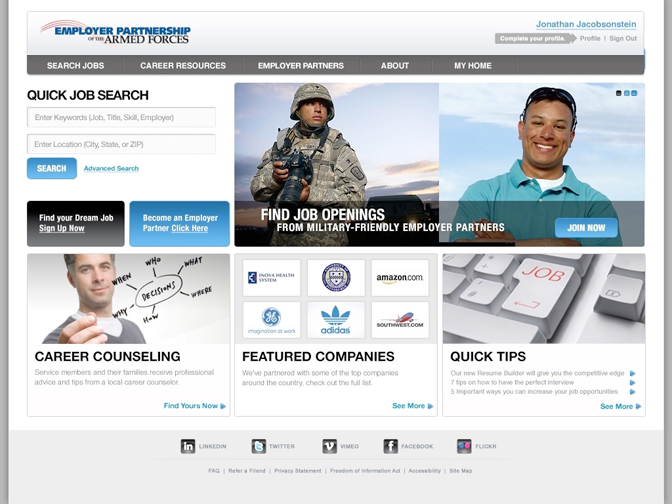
Portal helps vets, reserves, guardsmen land jobs

A new user-friendly Web portal will make it easier for veterans -- as well as reserve-component members, their families and wounded warriors -- land jobs with civilian employers who value their military experience.